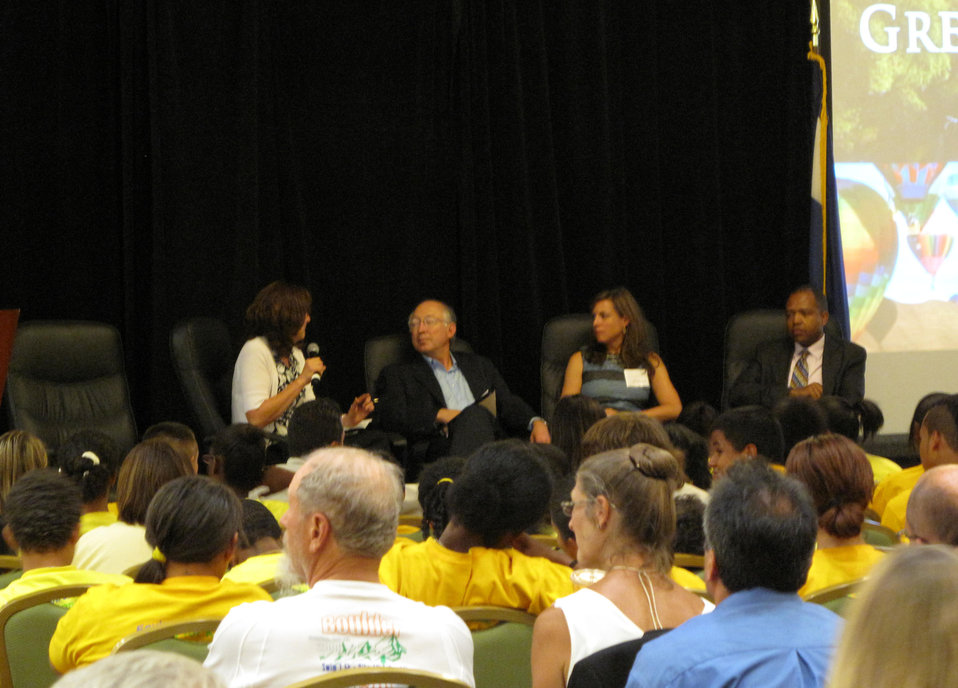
America's Great Outdoors Initiative

Secretary Salazar hears from Colorado youth about the environment.